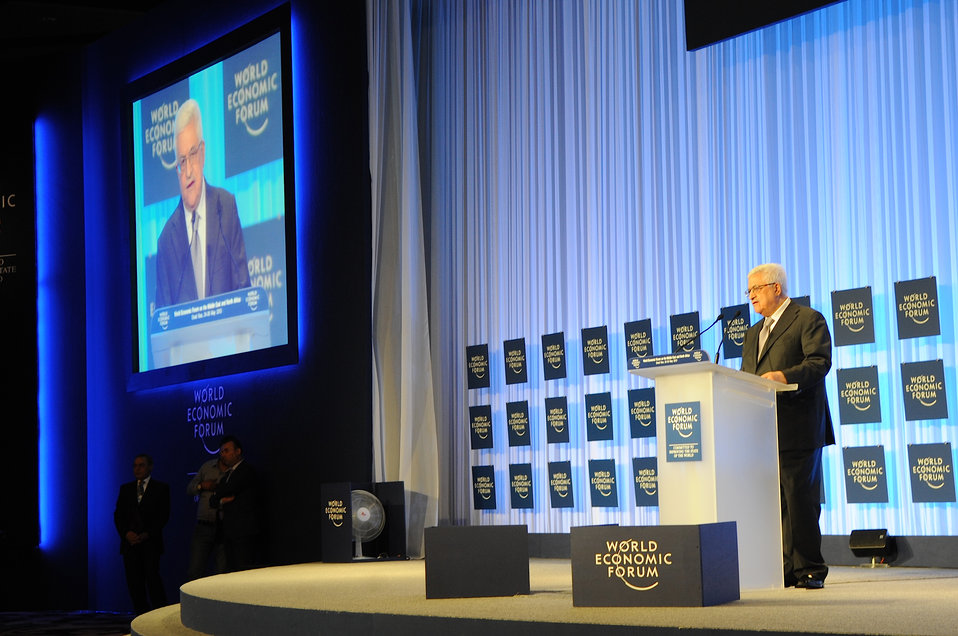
President Abbas Addresses the World Economic Forum

Palestinian Authority President Mahmoud Abbas addresses the closing plenary session of the World Economic Forum meeting, attended by U.S. Secretary of State John Kerry, in Dead Sea, Jordan, on May 26, 2013.